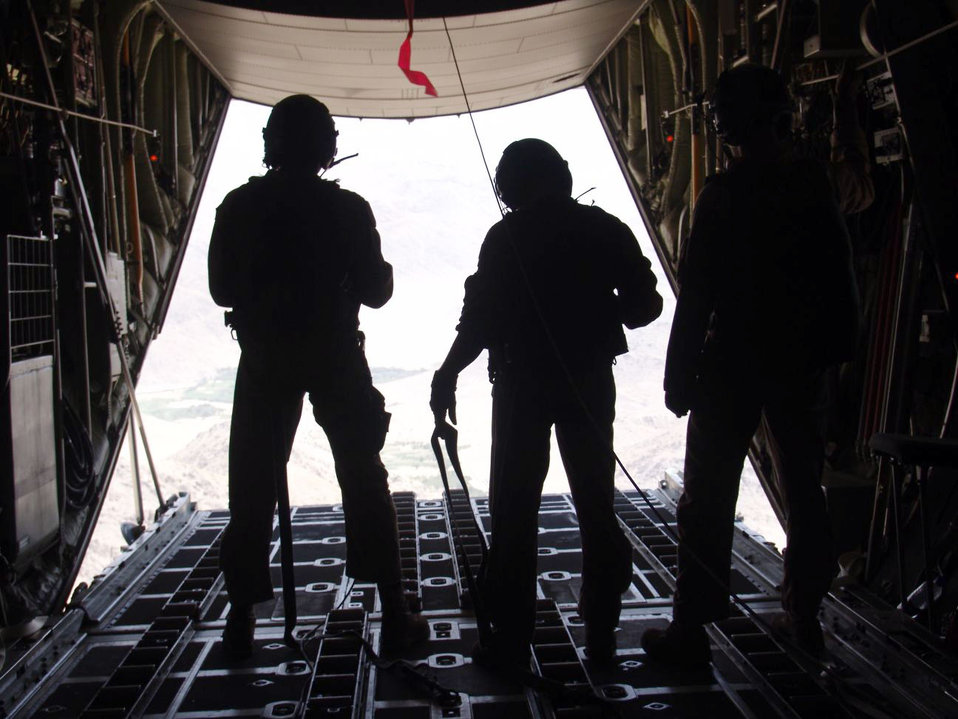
North Carolina guardsmen make combat airdrop in Afghanistan

SOUTHWEST ASIA -- (From left) Tech. Sgt. Jermaine Parker and Staff Sgts. Chad Wells and Kelly Van Gundy gaze upon the Afghan terrain after airdropping two bundles containing more than 8,600 pounds of food, water and supplies. The Airmen are C-130 Hercules loadmasters with the 738th Expeditionary Airlift Squadron at a forward-deployed location. Sergeants Parker and Wells are deployed from the North Carolina Air National Guard's 156th Airlift Squadron, and Sergeant Van Gundy is deployed from Little Rock Air Force Base, Ark.